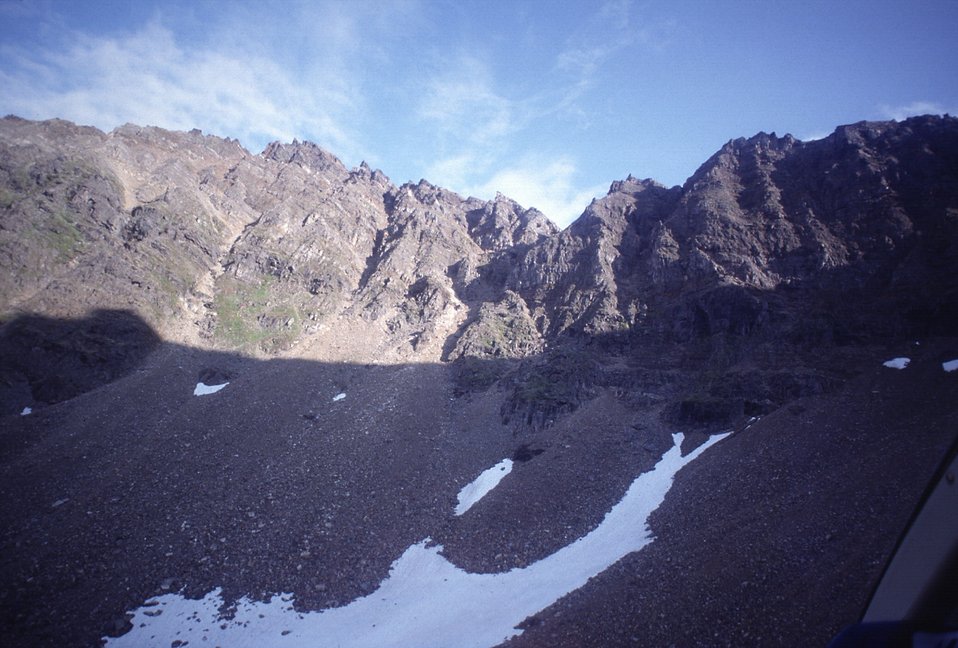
Kigluaik Mountains, Seward Peninsula